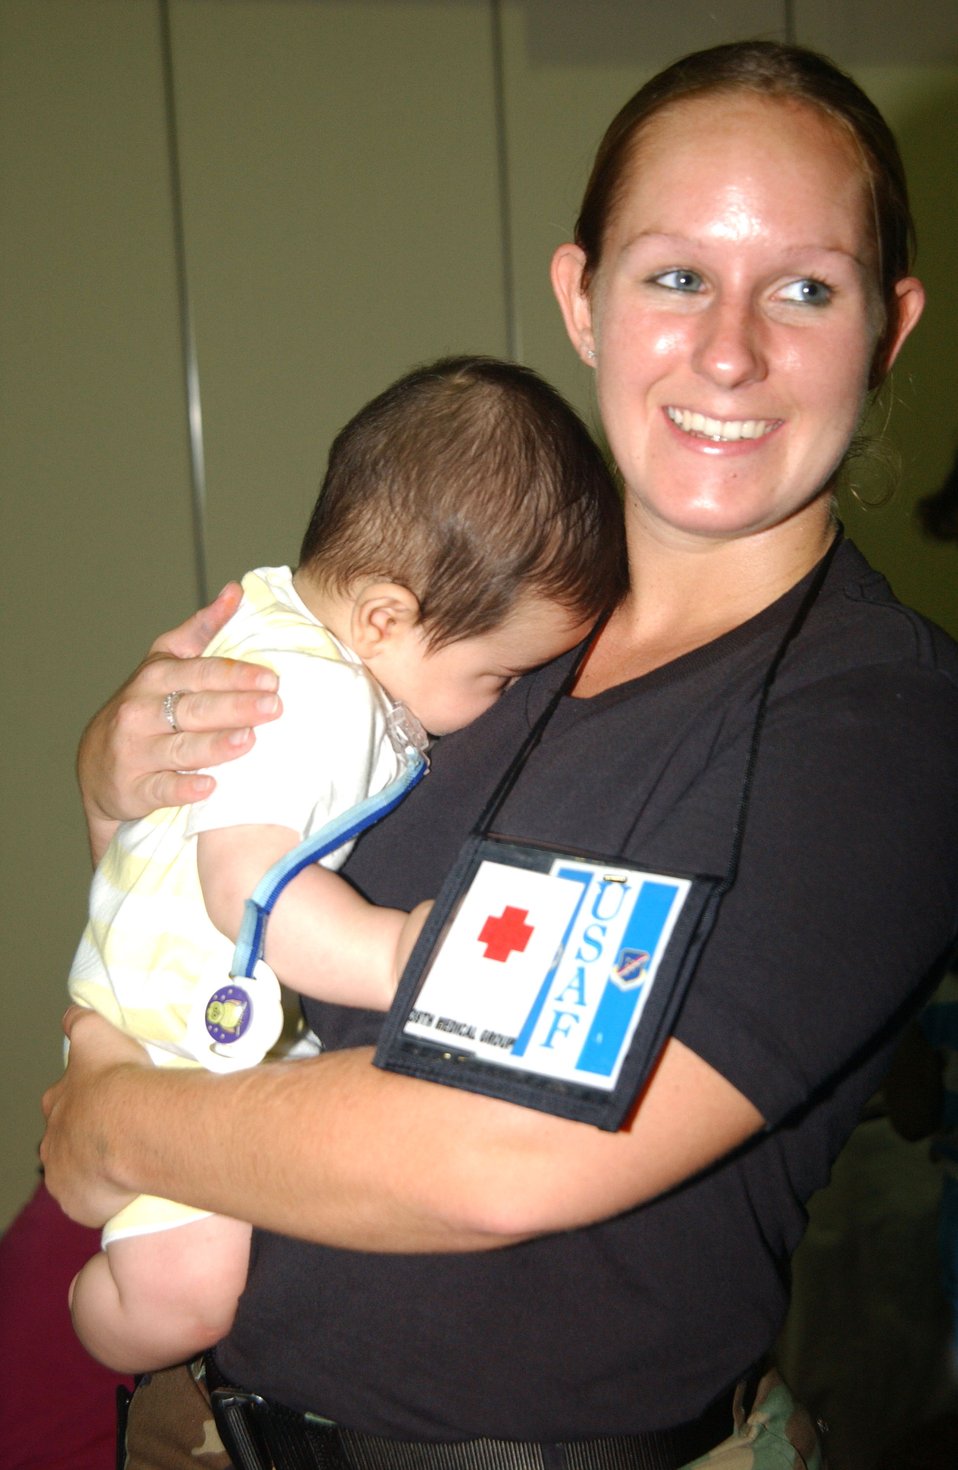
Incirlik continues helping Americans leaving Lebanon

Senior Airman Kylee Wright holds one of the visitors at Incirlik Air Base, Turkey, on July 24 -- a child whose family who left Lebanon. Airmen at Incirlik are providing assistance to Americans arriving at Incirlik following their decision to leave Lebanon. Airman Wright is assigned to the 39th Medical Group.